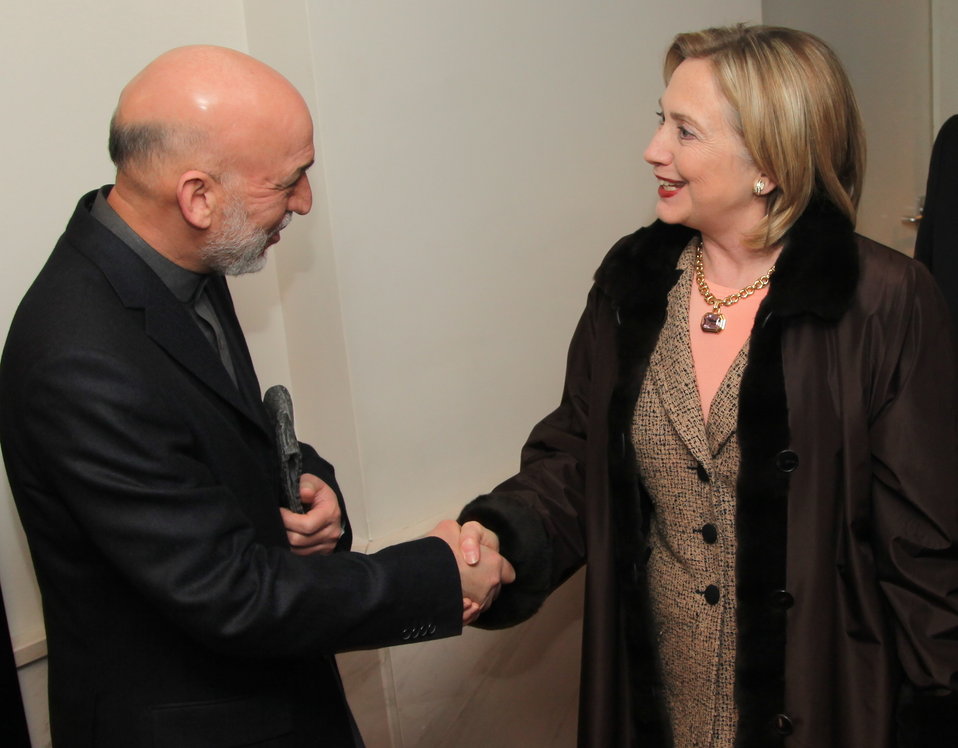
Secretary Clinton Shakes Hands With Afghan President Karzai

U.S. Secretary of State Hillary Rodham Clinton shakes hands with Afghan President Hamid Karzai in Munich, Germany, on February 5, 2011.